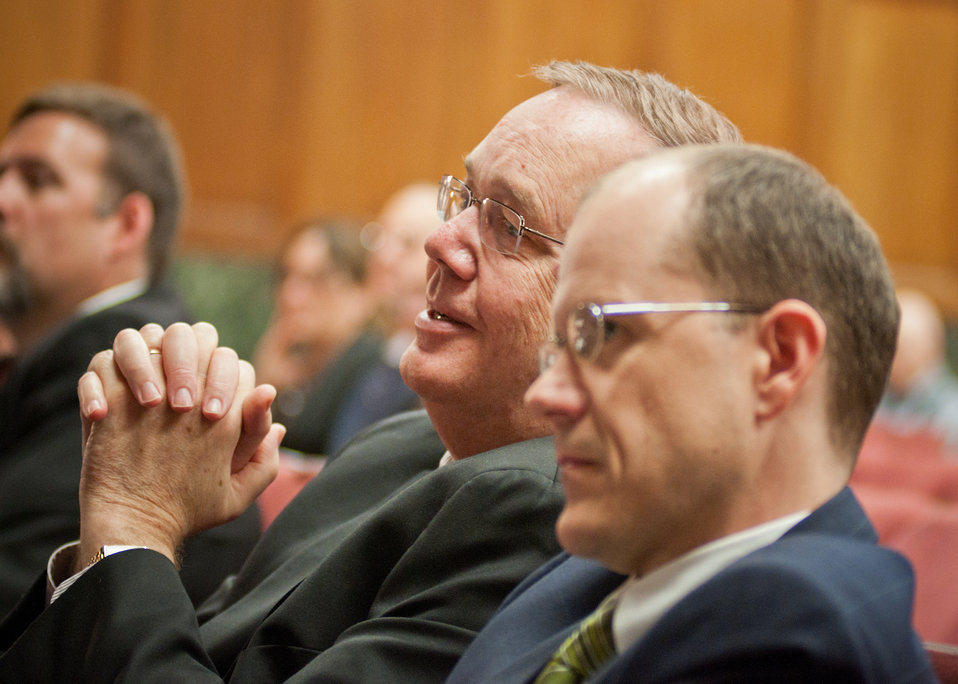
Dallas Tonsager (left), Under Secretary, Rural Development and Doug O’Brien (right), Administrator listen to recordings of retiring employees reflecting on their accomplishments during their tenure with the agency, at the Rural Development Celebration of Service held at the United States Department of Agriculture in Washington, DC, on Wednesday, November 16, 2011.